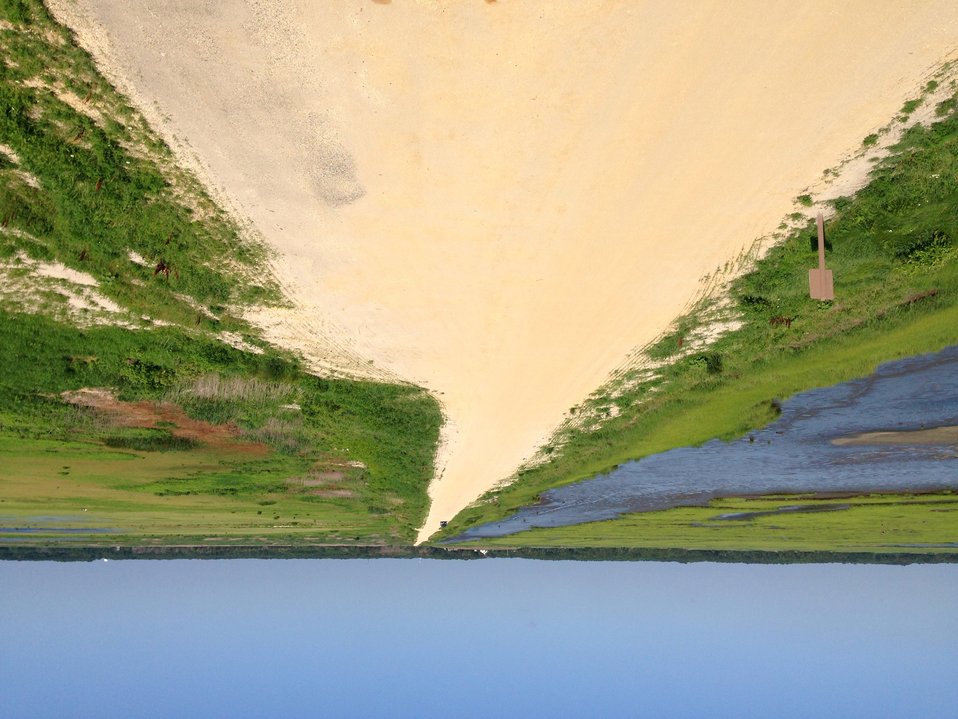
Forsythe wildlife drive after hurricane repairs

View from Turtle Cover Tower on south dike looking west.